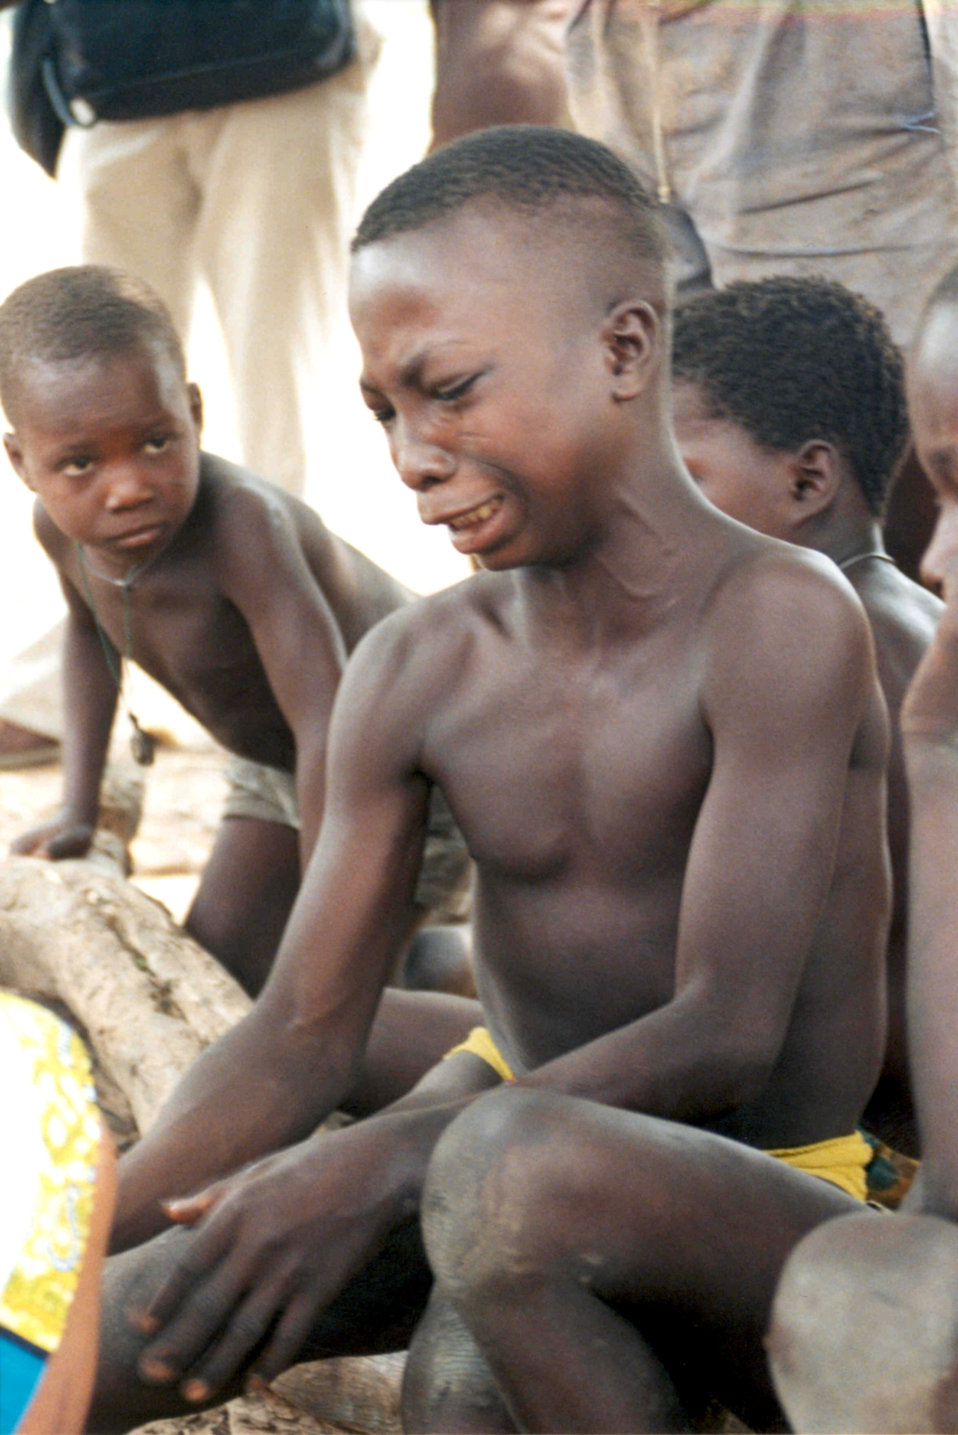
This image depicts the painful suffering being sustained by a young girl named Akouma, who is infected with Guinea worm, Dracunculus medinensis. Two health workers are extracting an adult worm from the girl's lower right leg. The Guinea worm has migrated, over a period of approximately one year, to its site of emergence from its subcutaneous location, out through a ruptured blister, in order to release its eggs in a local pond or dam. This blister causes a very painful burning sensation and eventually (within 24 to 72 hours) ruptures. Once the white, spaghetti-like worm emerges from the wound, it is pulled out only a few centimeters each day, and wrapped around a small stick or piece of gauze. Sometimes a worm can be pulled out completely within a few days, but this painful process often takes weeks.